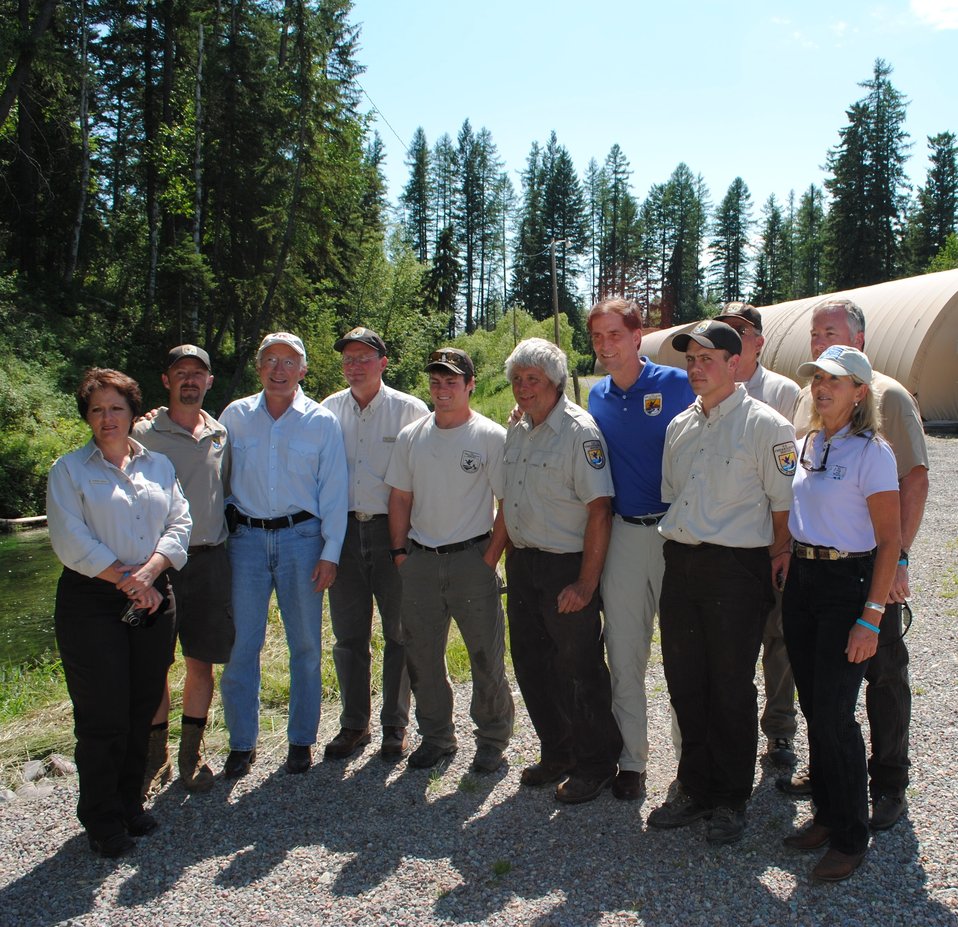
Secretary Salazar and Director Ashe with Creston National Fish Hatchery Staff

Secretary of the Interior Ken Salazar and Director of the U.S. Fish and Wildlife Service Dan Ashe pose with staff on a visit to the Creston National Fish Hatchery in Montana.